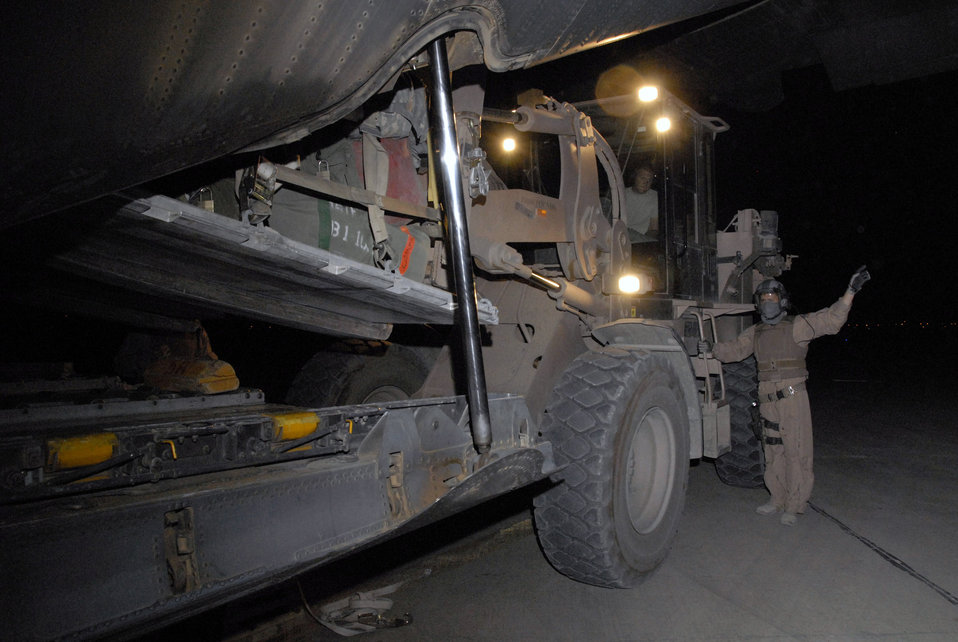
Special delivery

Staff Sgt. Gabriel Molanders martials in Airman 1st Class Bryan Rogers who's delivering a baggage pallet for a group of Soldiers from Fort Benning, Ga., departing Iraq May 13. Sergeant Molanders is a C-130 Hercules loadmaster with the 737th Expeditionary Airlift Squadron deployed from Dyess Air Force Base, Texas, and Airman Rogers is an aerial porter with the 447th Air Expeditionary Group deployed from McGuire AFB, N.J.